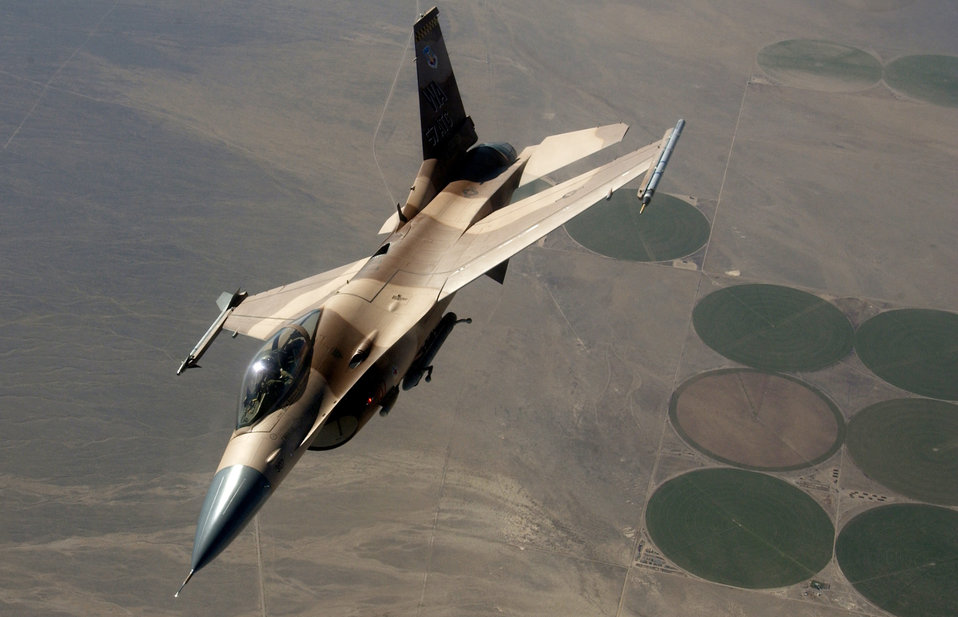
Red Flag Exercise

An F-16 Fighting Falcon from the 64th Aggressor Squadron, Nellis Air Force Base, Nev., flies over the Nevada countryside Oct. 12 during a Red Flag exercise. The exercise tests aircrews' war fighting skills in realistic combat situations.